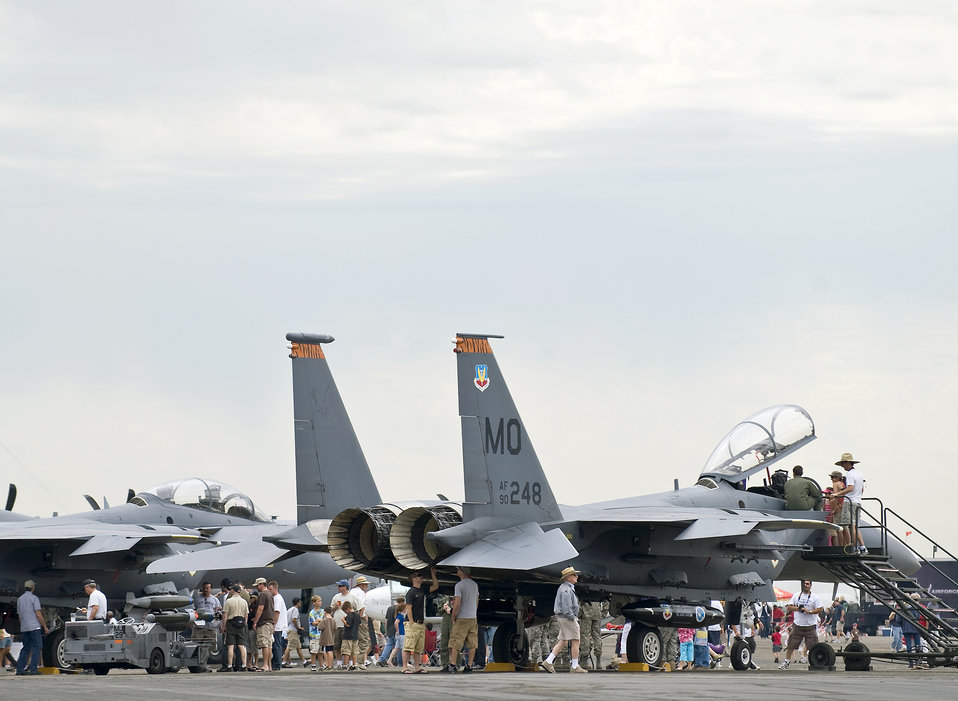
Air Force Week Sacramento

Air show spectators get the chance to check out two F-15E Strike Eagles from the 391st Fighter Squadron at Mountain Home Air Force Base, Idaho, Sept. 12, 2009, during the California Capital Air Show, the culminating event of Air Force Week Sacramento. Air Force Week Sacramento is an event featuring various activities and exhibitions to educate the community about the Air Force's capabilities and missions.